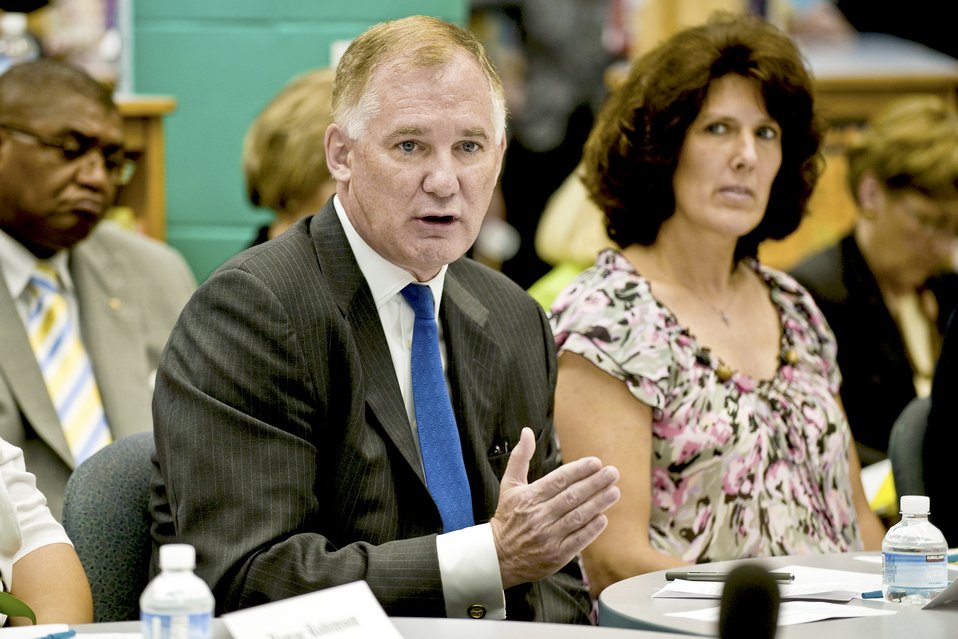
Military parents voice education concerns to leaders

Deputy Defense Secretary William J. Lynn III speaks during a meeting June 22, 2010 at Fort Belvoir Elementary School, Va. Mr. Lynn, Education Secretary Arne Duncan, Dr. Jill Biden, wife of Vice President Joe Biden, Army Chief of Staff Gen. George W. Casey Jr. and others visited the school to meet with servicemembers and spouses to discuss the challenges impacting military children and families.